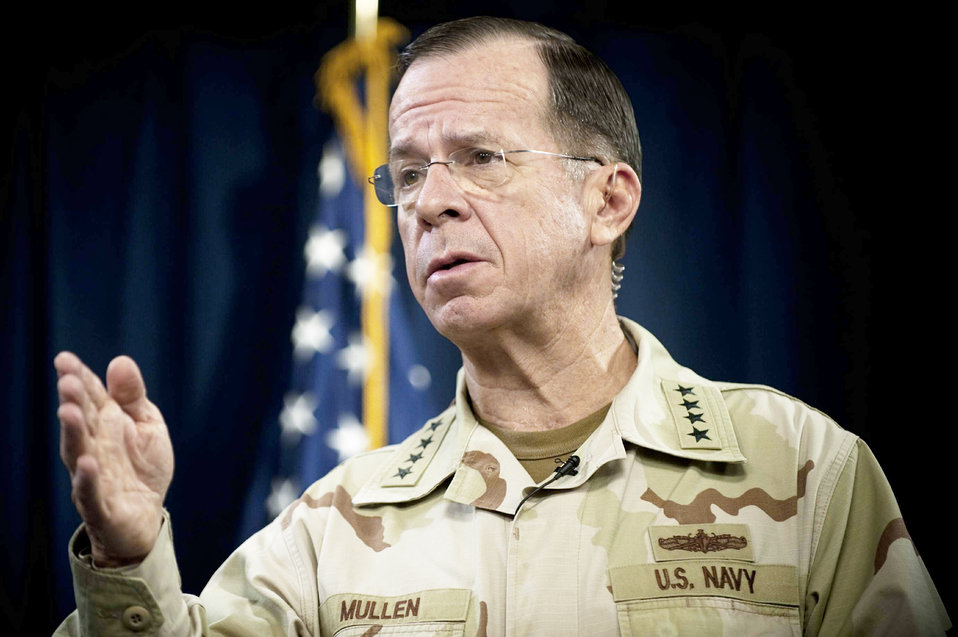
MIlitary Health System

Chairman of the Joint Chiefs of Staff Adm. Mike Mullen, shown in this file photo, said it is extremely important to find rapid health care solutions for servicemembers and their families and to ensure they understand that seeking help is a sign of strength. He was addressing more than 3,000 military and civilian medical professionals Jan. 25 during the 2010 Military Health System Conference in Maryland.